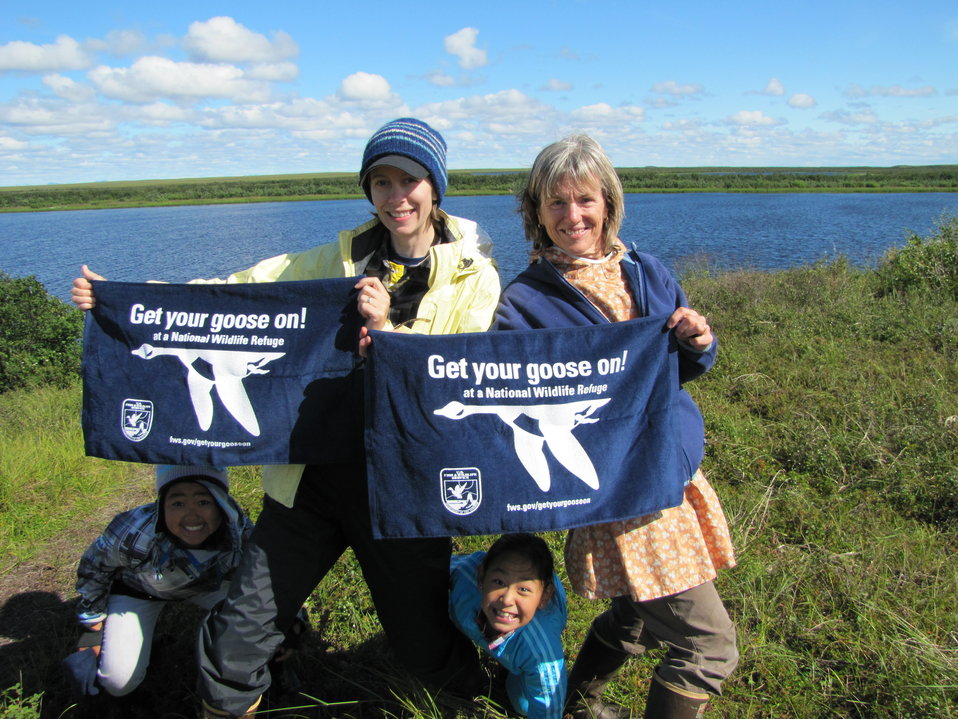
Get Your Goose On!

Brittany and Susan showcase their towels on a sunny arctic summer's day, while Julie and Candace seek out a little shade.